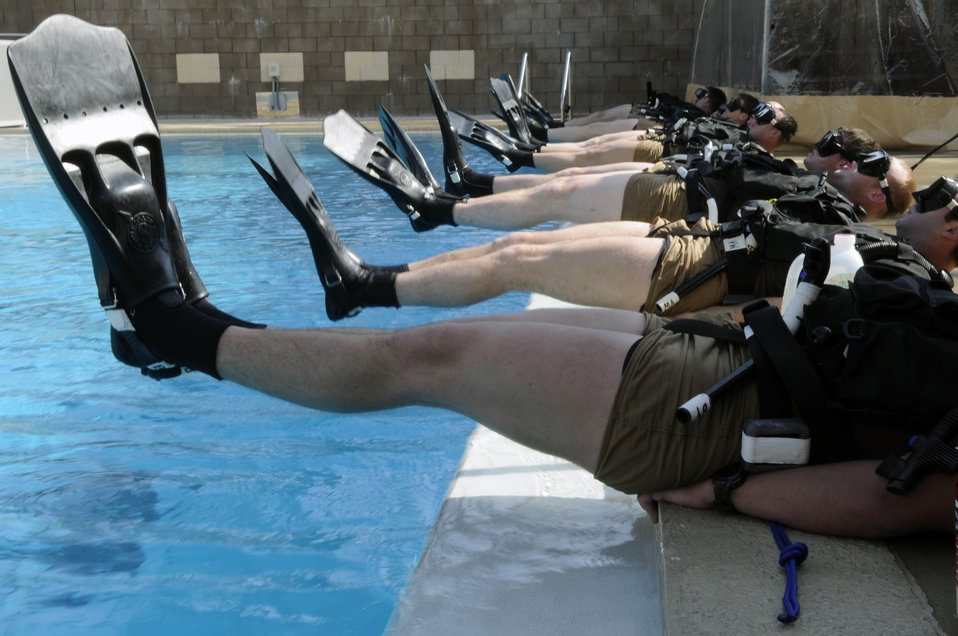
Special Tactics Training

Special operations Airmen in training prepare to do flutter kicks Feb. 10 during their pre-scuba formal training at Hurlburt Field, Fla. The Airmen are assigned to the Special Tactics Training Squadron.